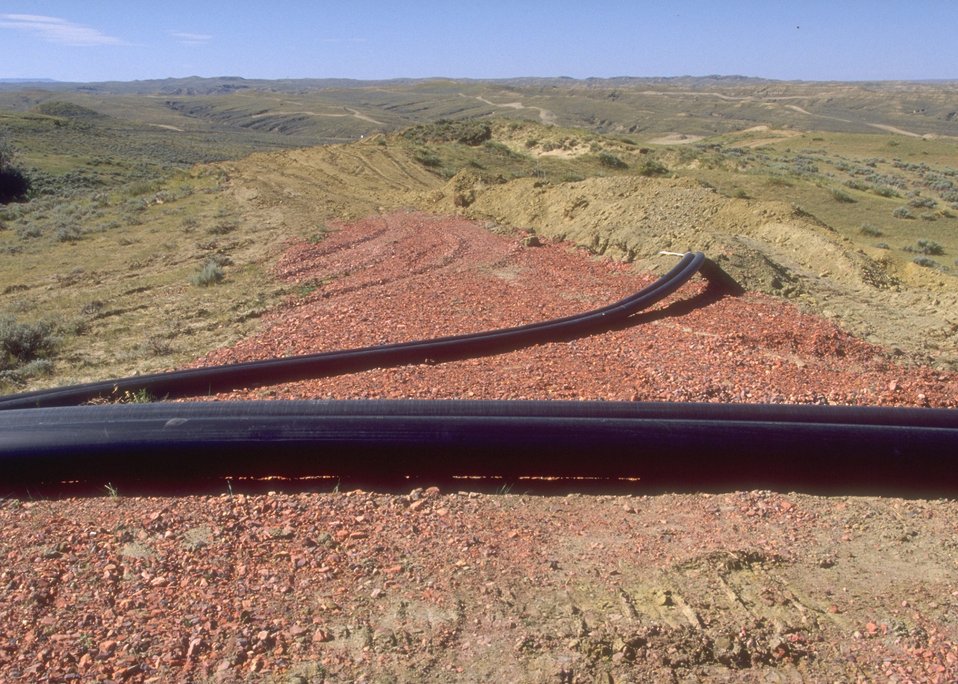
Construction for coal bed methane development, Buffalo Field Office.